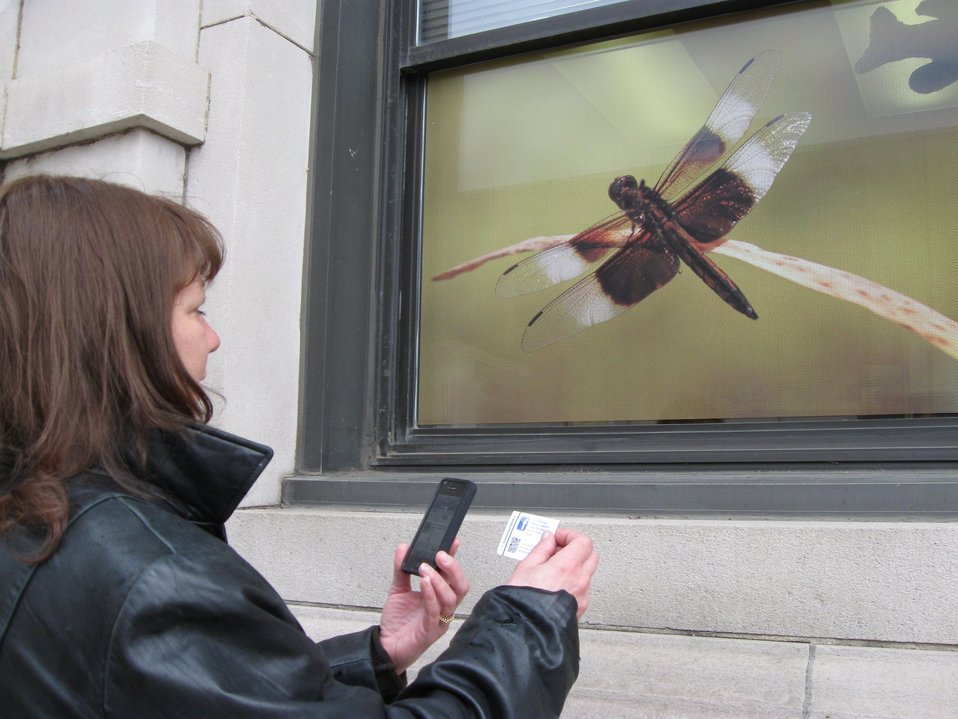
QR code on business cards

National Wildlife Refuge System staffer Lisa Liddell scans a QR code printed on the back of a business card at Upper Mississippi River National Wildlife and Fish Refuge. The code takes users to the refuge’s Facebook page. (Cindy Samples)